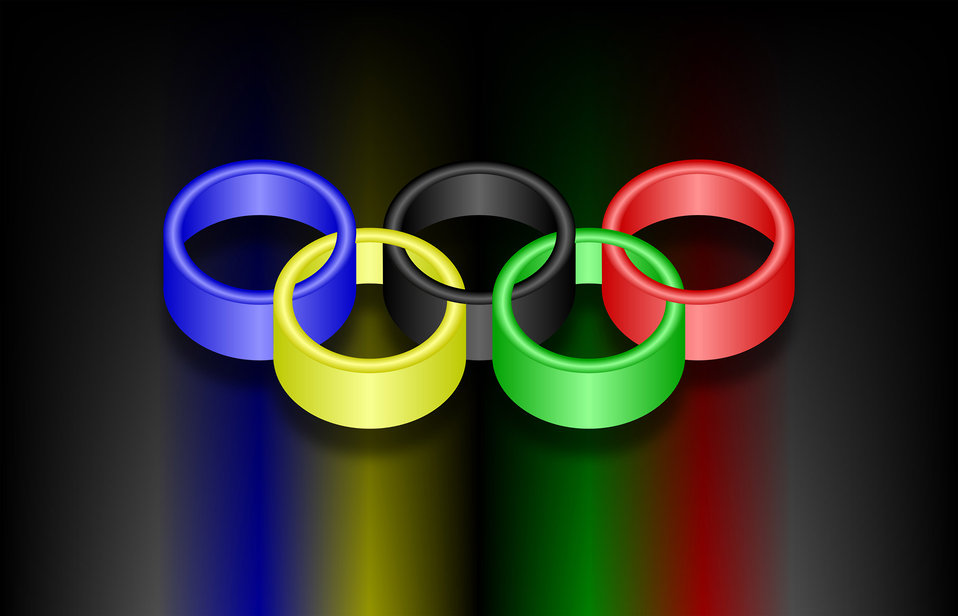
Olympic rings 1

The olympic rings with some light effects..